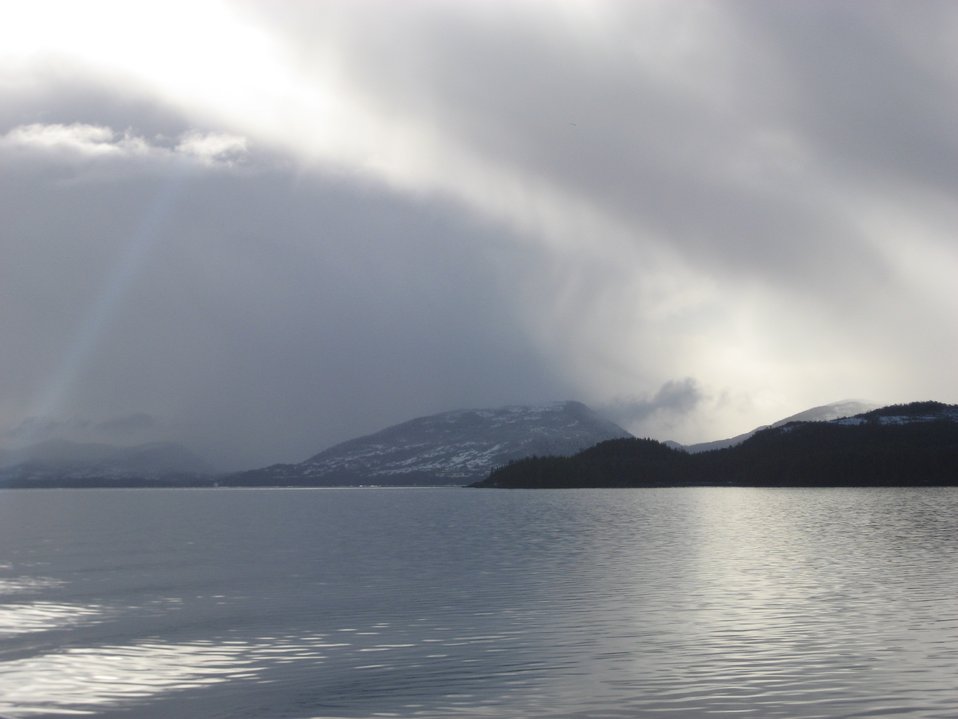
Light, sun, and clouds along the Inside Passage